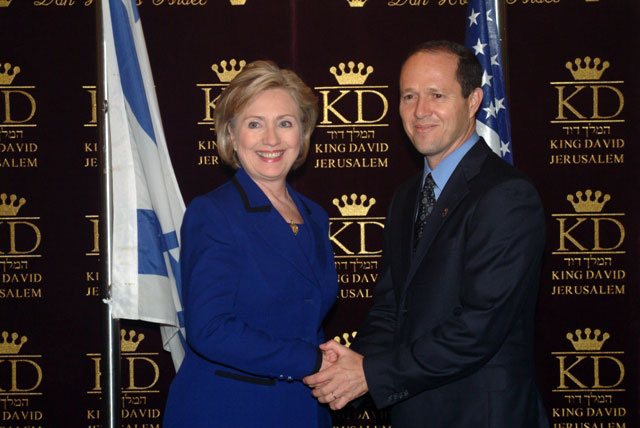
Secretary Clinton meets Jerusalem Mayor Nir Barkat and the King David hotel in Jerusalem March 3, 2009.